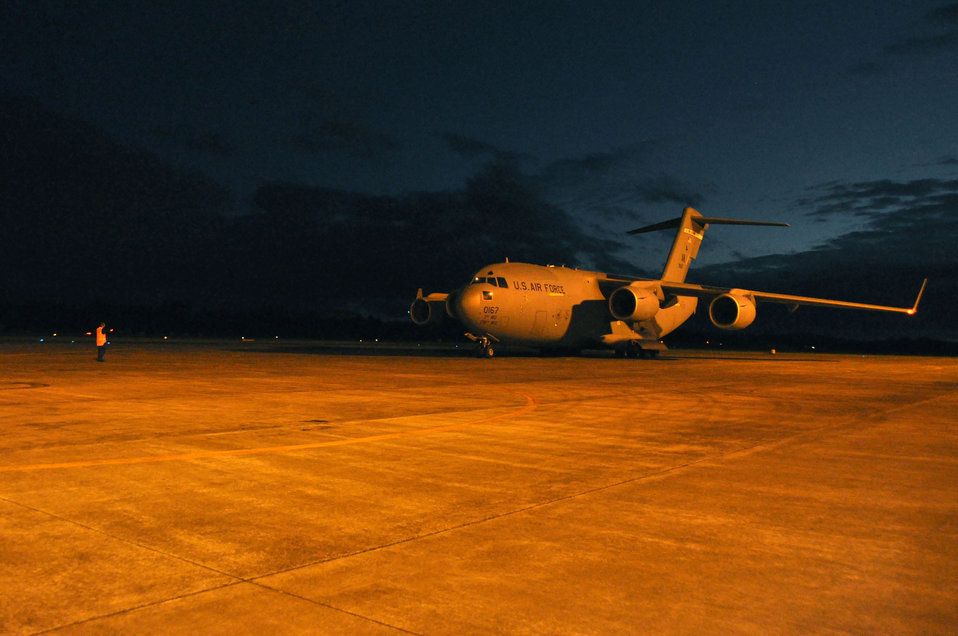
Just arrived

A C-17 Globemaster III arrives for the Whenuapai Air Show March 18 in New Zealand. This is the first U.S. aircraft since 1981 that has participated in the annual show. The C-17 is from Elmendorf Air Force Base, Alaska.